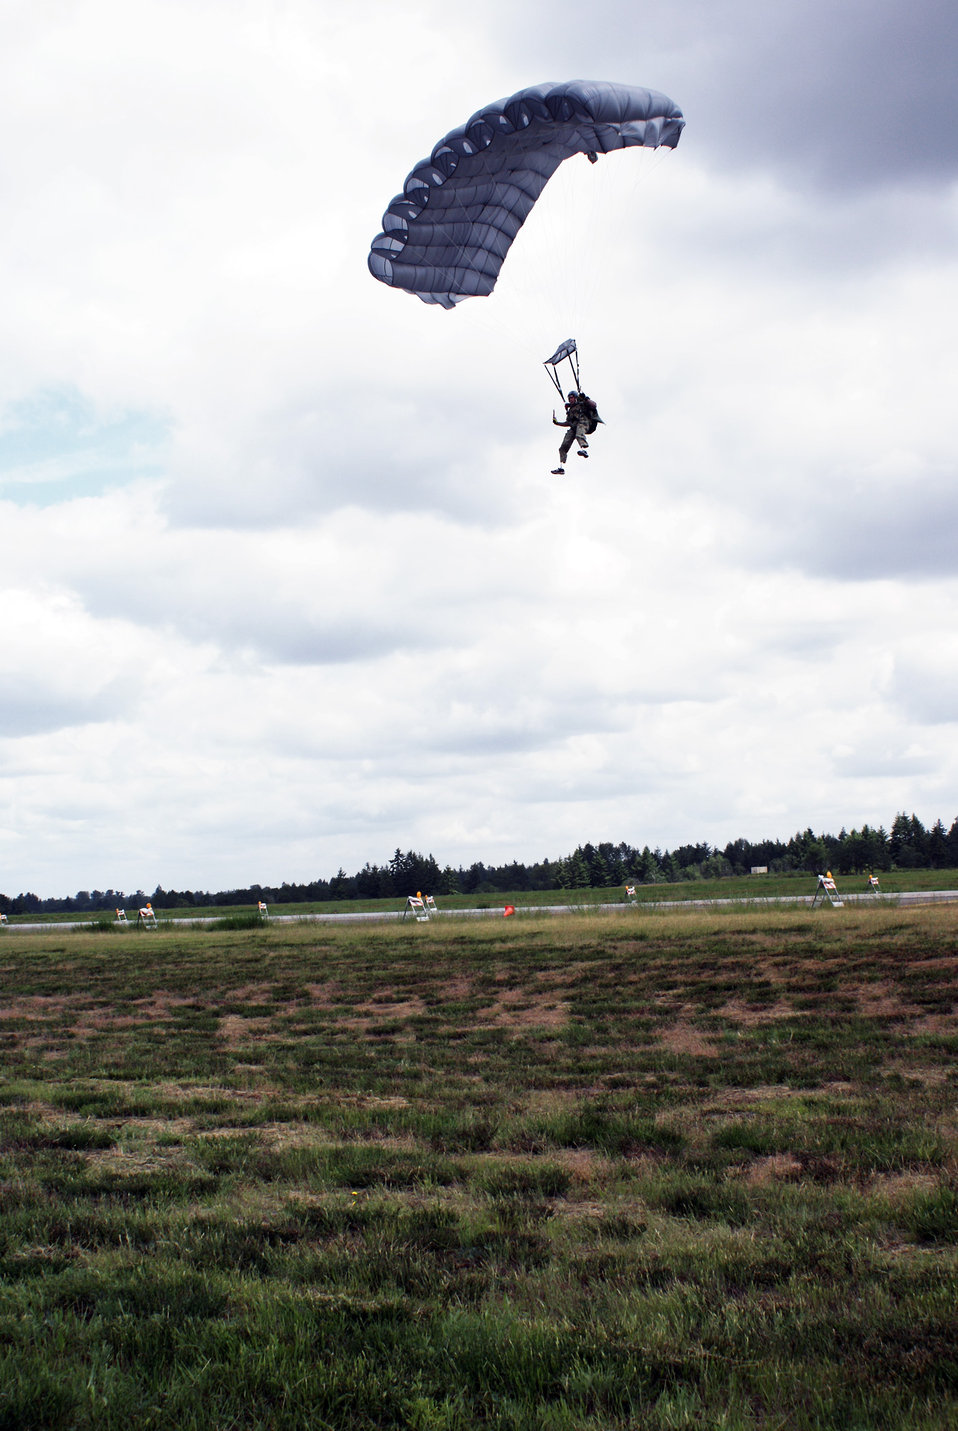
Special tactics squadron double amputee makes historic jump

Staff Sgt. Shaun Meadows prepares to land as he completes a his jump on June 14, 2010. Sergeant Meadows is assigned to the 22nd Special Tactics Squadron at Joint Base Lewis-McChord, Wash.